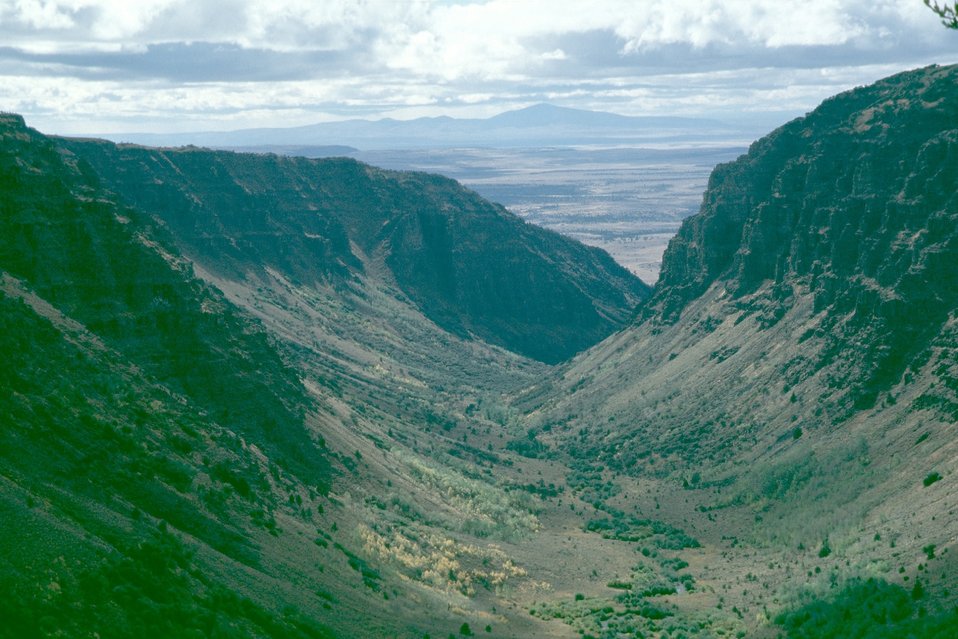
Little Blitzen looking West from Pruitt Overlook, Steen's Mountain.